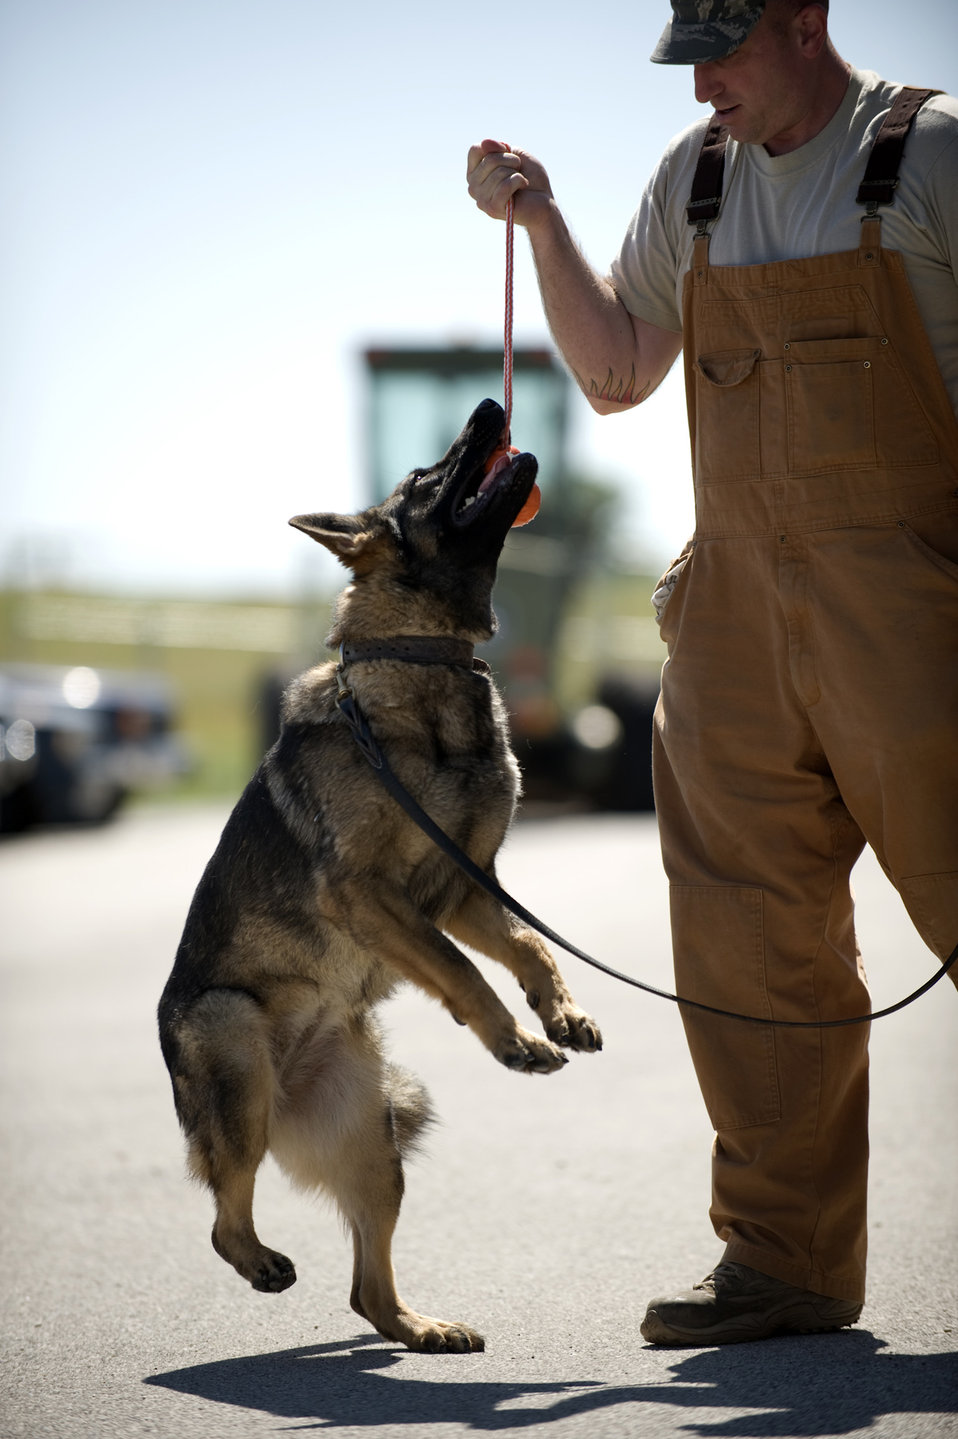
Training for military working dogs

Staff Sgt. William Riney rewards his military working dog for detecting narcotics around vehicles on the training grounds of Lackland Air Force Base, Texas. Military working dogs are enrolled in a 60- to 90-day training program where they are taught to detect explosives and drugs. They are also taught deterrence training and how to protect their handler.